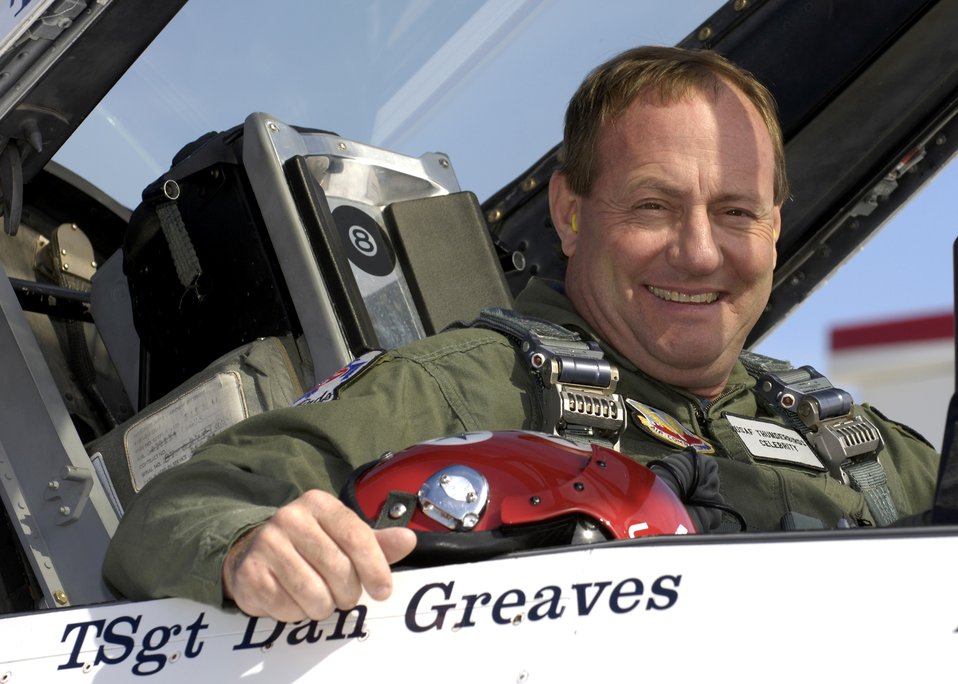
Thunderbird flight

Kenny Schrader, driver of the Air Force #21 Wood Brothers/JTG Racing Ford Fusion, is all smiles before his orientation flight with the Thunderbirds, Thursday, Mar. 9, 2006.